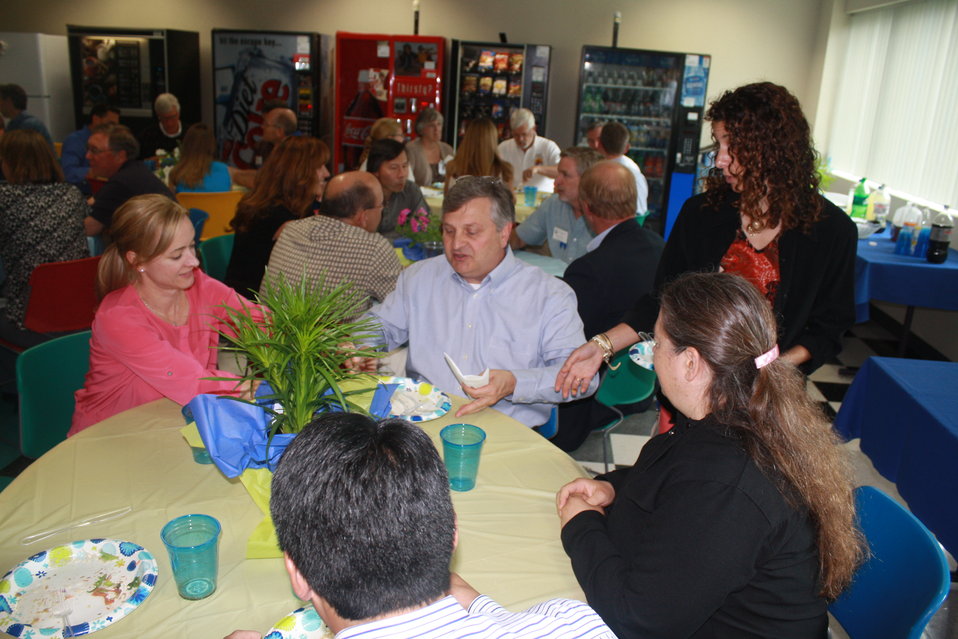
R5 Awards Ceremony